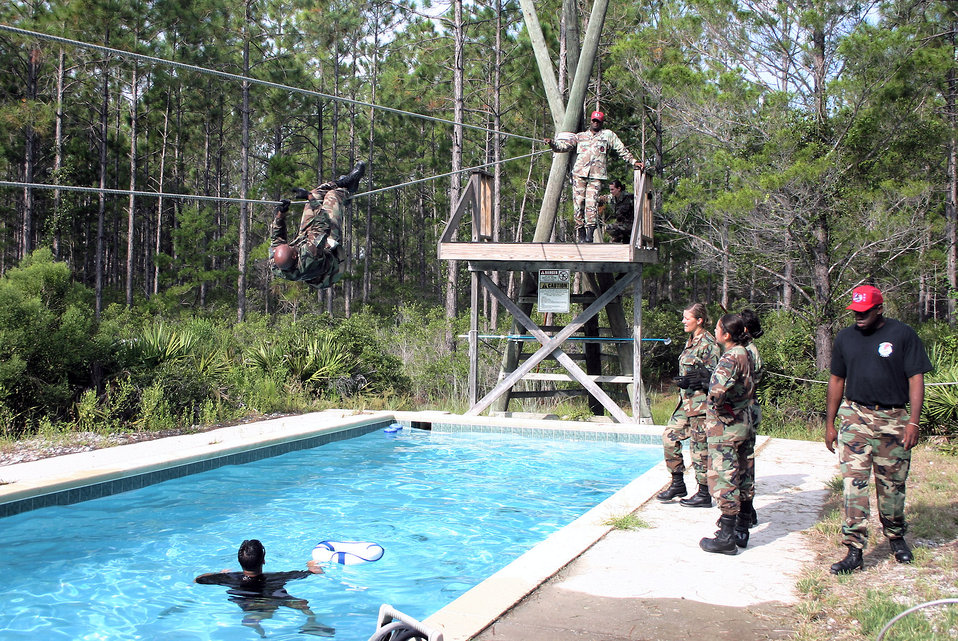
Airmen hone contingency skills at Silver Flag

Tech. Sgt. Don White attempts the last of the 13 stations on the 823rd RED HORSE Squadron's obstacle course during a Silver Flag exercise at Tyndall Air Force Base, Fla.